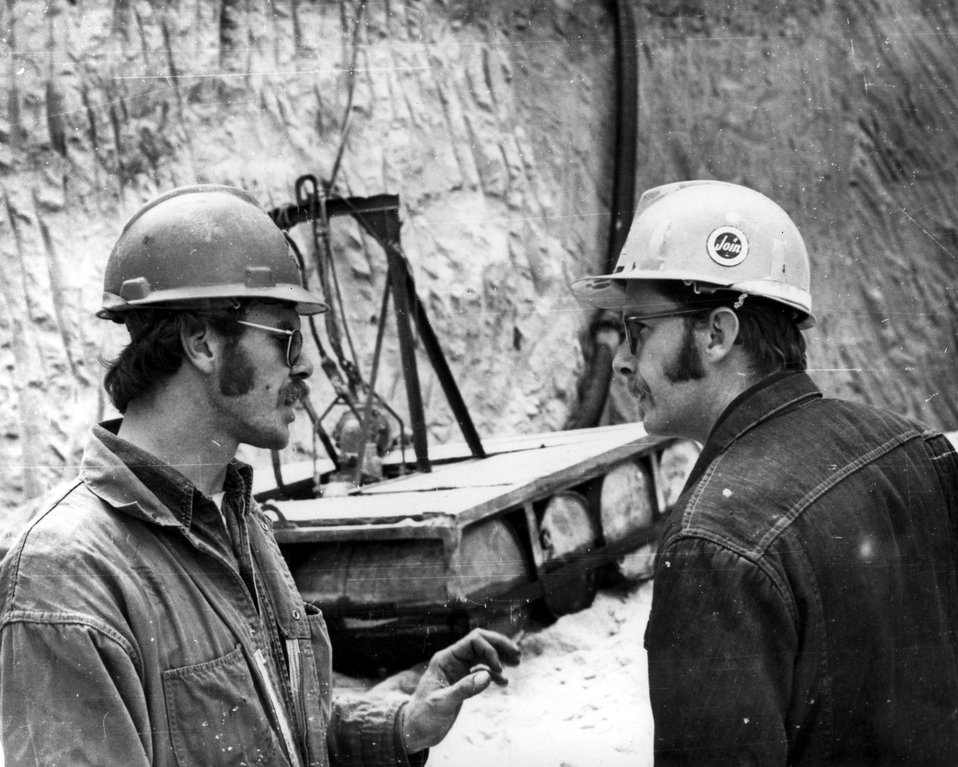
Eric Hansen's (left) day begins at 3:30 am at his home in Riverton, Wyoming when he wakes to catch a bus to Utah International's Lucky Mc Mine, where he starts at 6 am in charge of pumping water from pits at Lucky Mc uranium mines. c. 1976